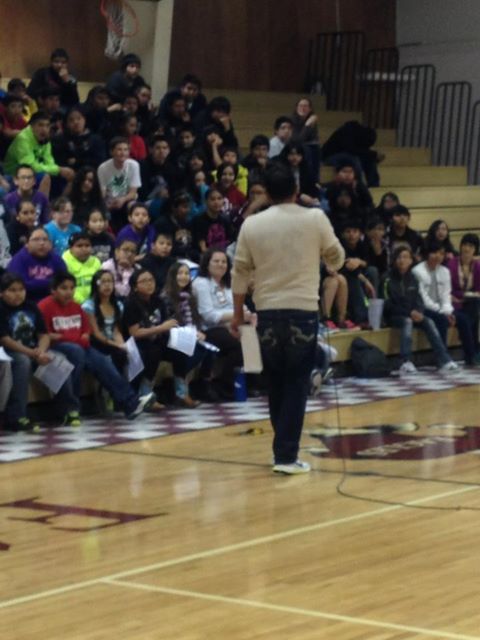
Drug facts week for ESCAPE Project in Wyoming